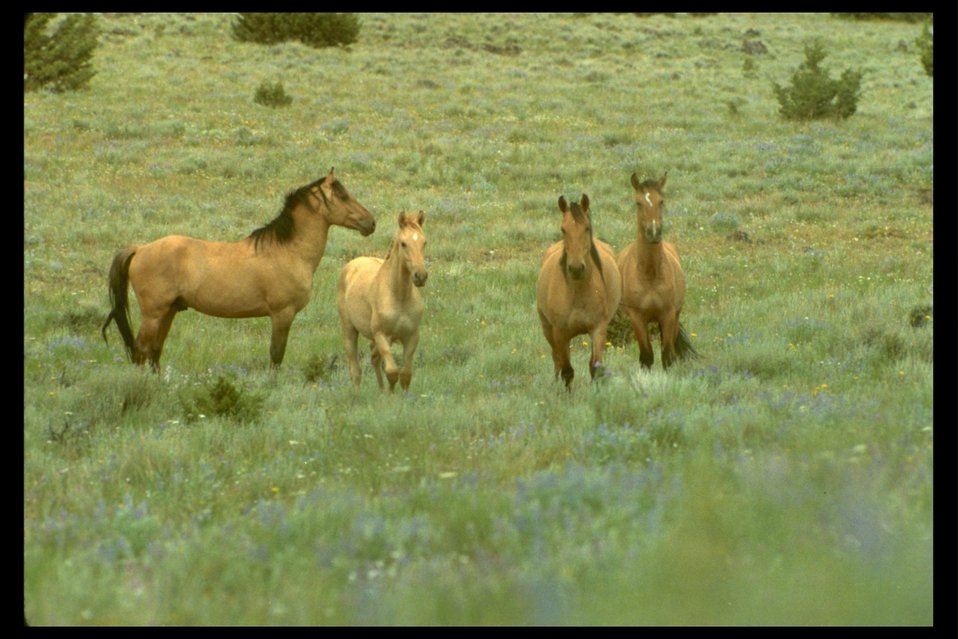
Kiger mustangs on the Kiger HMA. Slide from print.